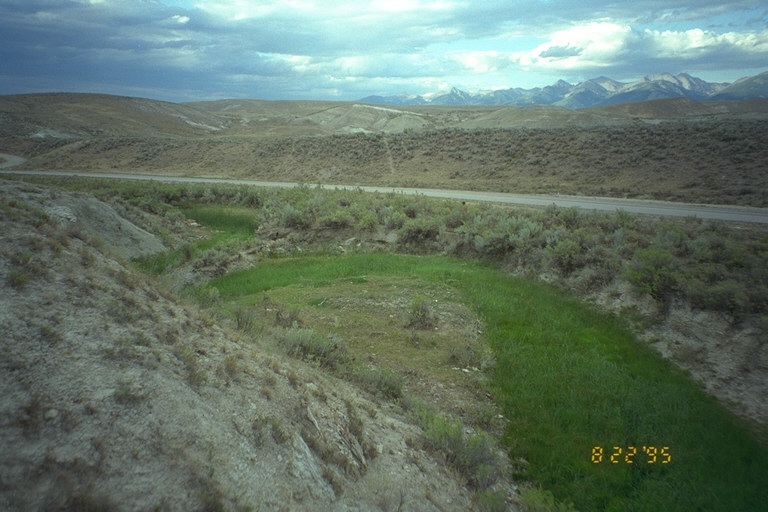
Riparian area Public Lands Salmon Field Office UCSC Upper Columbia Salmon Clearwater District